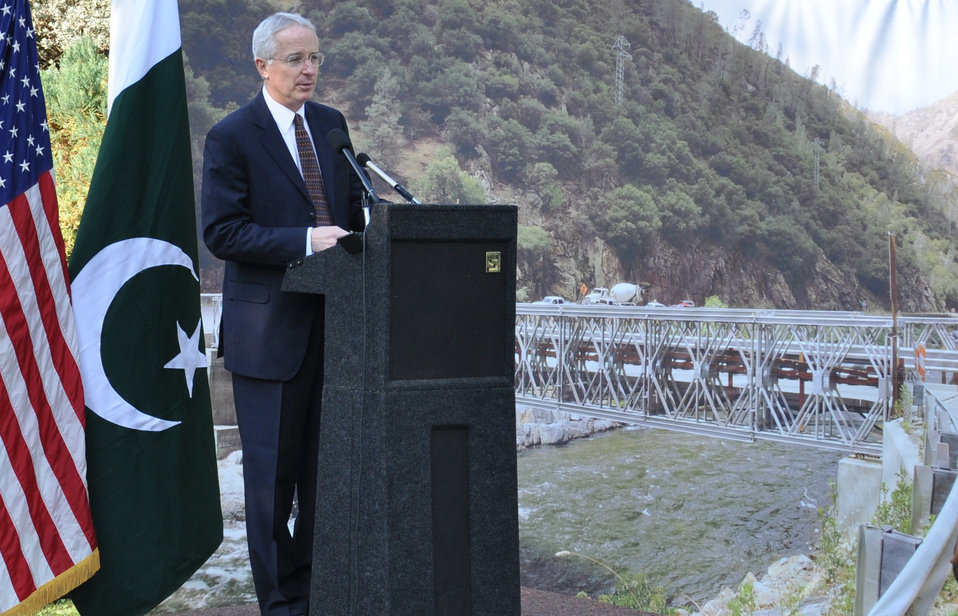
U.S.-Provided Bridges to Assist Flood Recovery in Khyber Pakhtunkhwa

December 1, 2010 - U.S. Ambassador Cameron Munter speaking at a bridge handover ceremony.